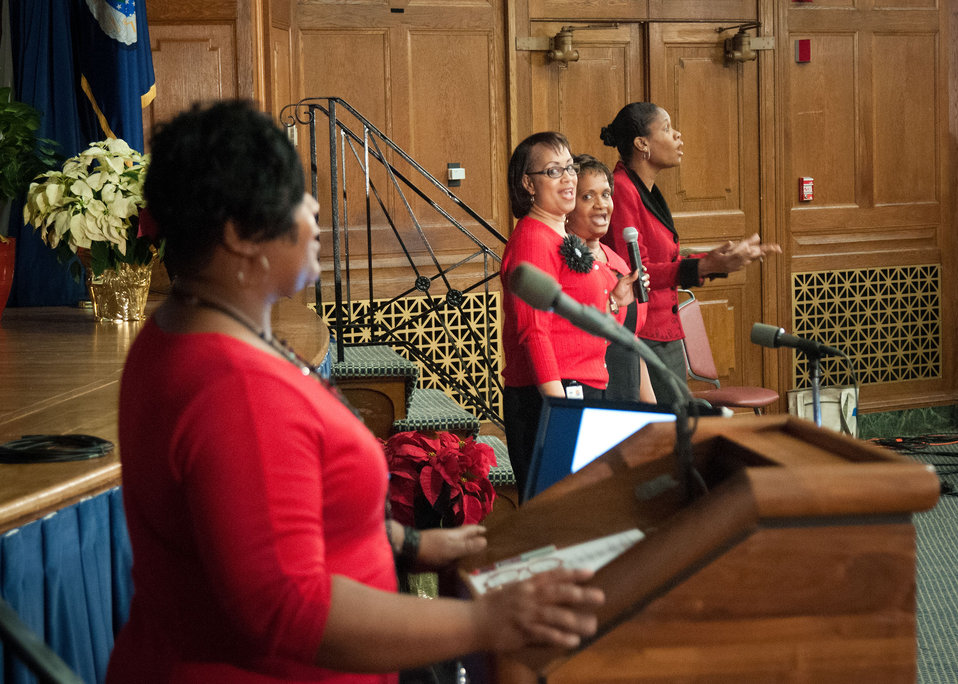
Mistress of Ceremonies Pamela Carter, Rita Mead, Reedema Rock and Susan Carter sing the U.S. Department of Agriculture (USDA) Song at USDA's Fourth Annual Cultural Transformation event held in Washington, D.C. on Tuesday, Dec. 4, 2012. The theme for the event “Faces of Cultural Transformation” Focusing on changing the way we serve our customers and cultural transformation’s benefits to employees.